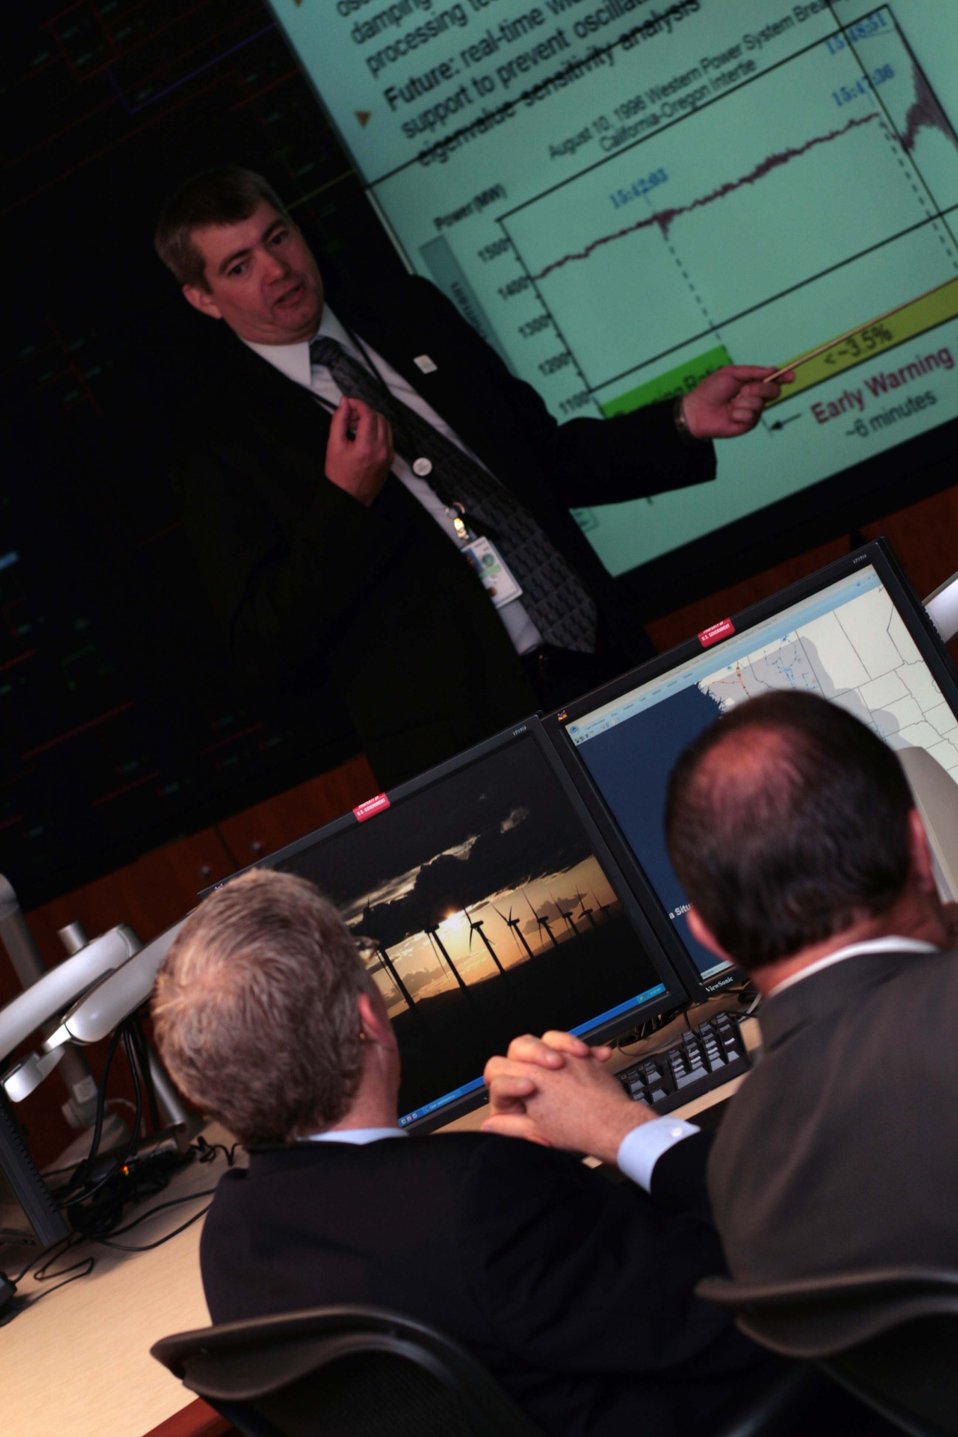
P-25